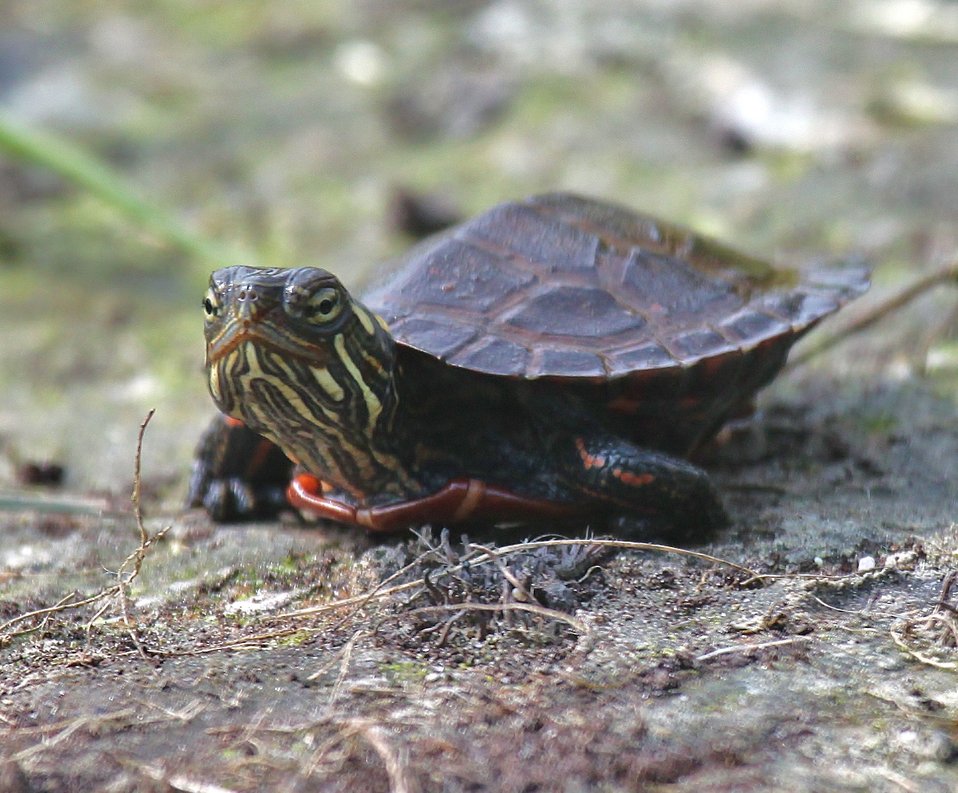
Photo of the Week - Hatchling Painted Turtle (VT)

Photo of the Week - 8/27/12

Hatchling painted turtle photographed at Missisquoi National Wildlife Refuge.